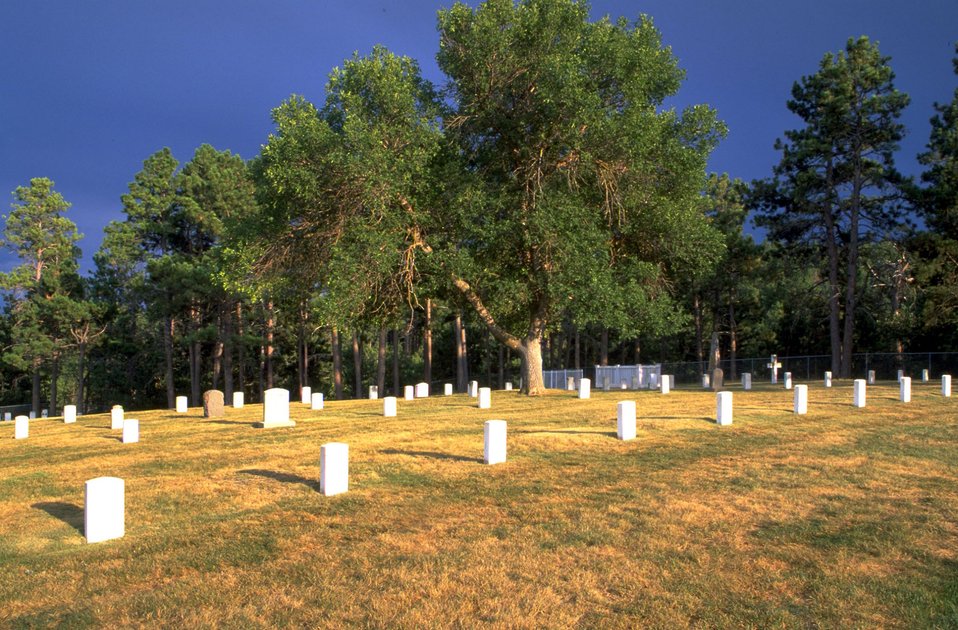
Old Post Cemetery - Fort Meade